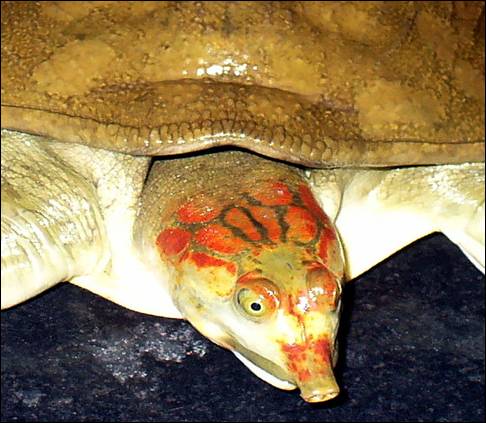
#10 - U.S. Proposals to CoP16

Countdown to CoP16: The United States has partnered with China and Vietnam to propose stronger CITES protections for certain species of Asian freshwater turtles, including the Leith’s softshell turtle (pictured below). The United States has submitted five proposals for consideration at the 16th Meeting of the Conference of the Parties to CITES to increase protections for 44 Asian freshwater turtles. Two of these proposals are co-sponsored by China and a third by Vietnam. Learn more: 1.usa.gov/12FAHSq

Leith's Softshell Turtle. Taken by Turtle Survival Alliance